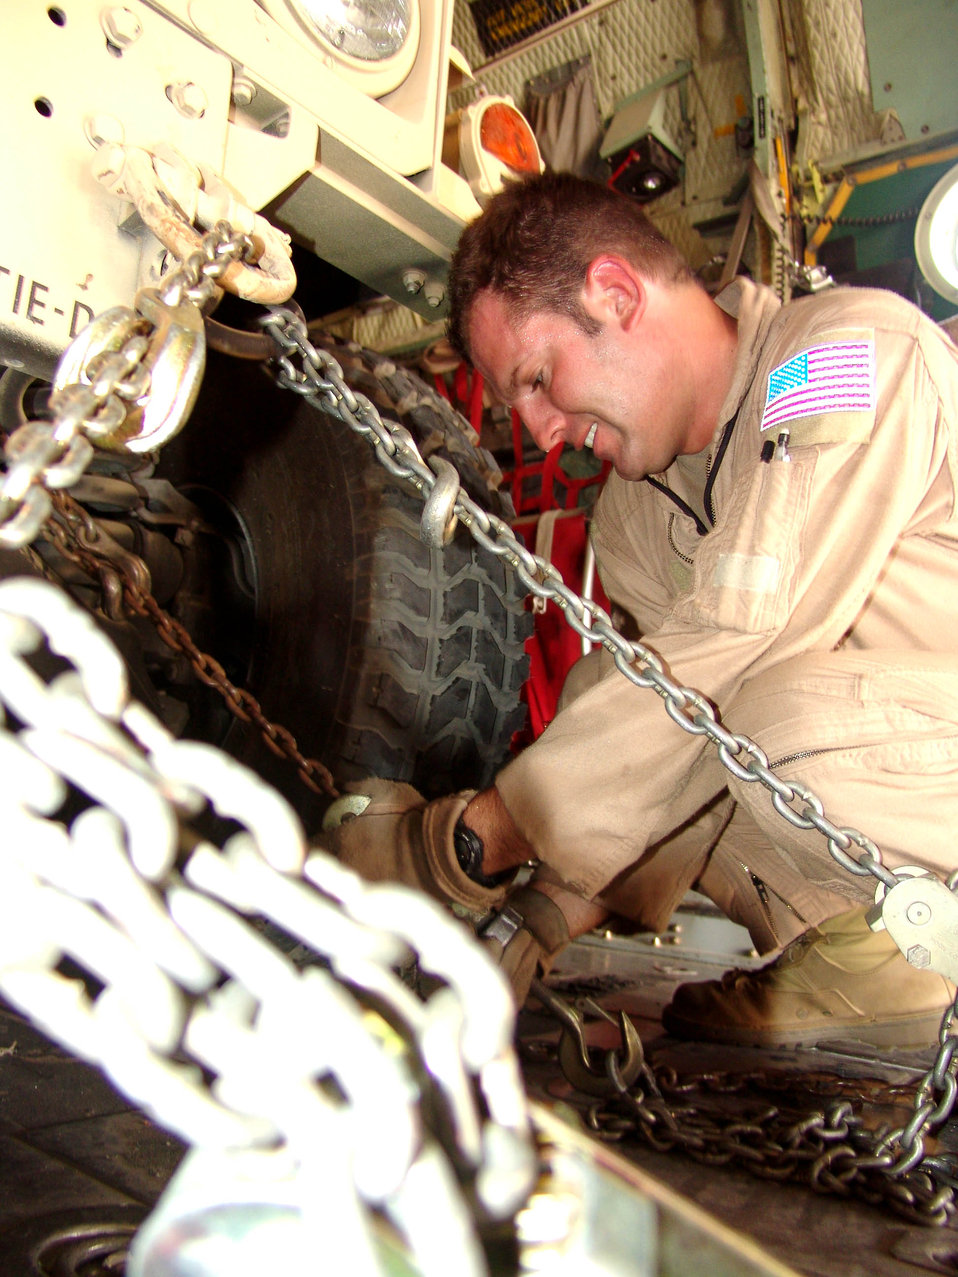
Humvee delivery

SOUTHWEST ASIA -- Staff Sgt. Joseph Stuart tightens chains attached to armored Humvees being loaded onto a C-130 Hercules headed for U.S. ground forces in Iraq. Sergeant Stuart is a loadmaster with the 737th Expeditionary Airlift Squadron at a forward-deployed location and is from Pope Air Force Base, N.C.